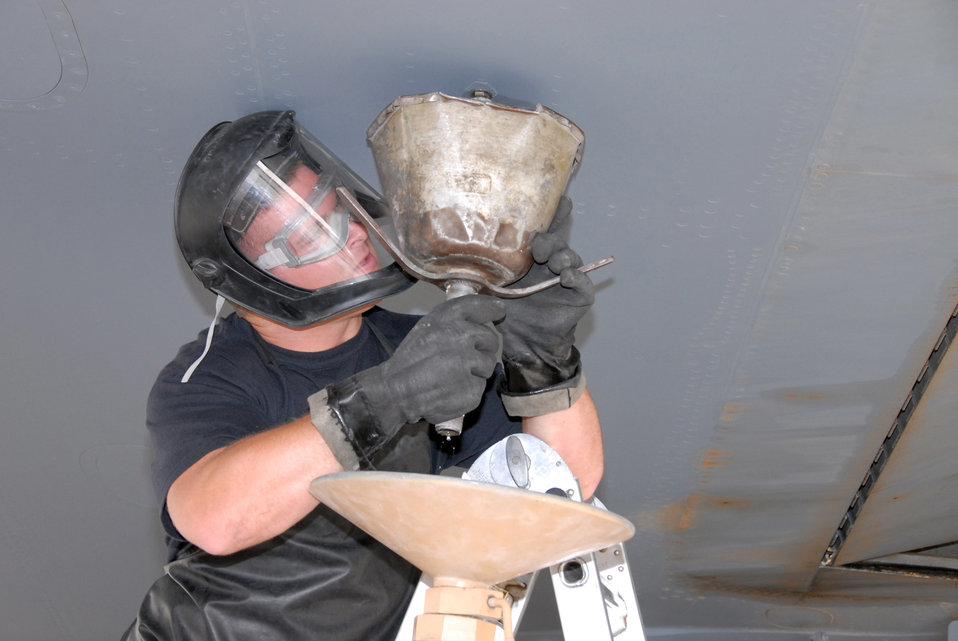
Tankers keep aircraft in the fight 24-7

Senior Airman Neal Sicard prepares a KC-135 Stratotanker for maintenance work on its fuel cell March 21 by draining the main fuel tank sumps. Airman Sicard is a crew chief assigned to the 340th Aircraft Maintenance Unit at a forward deployed location. The 340th AMU maintainers ensure tankers are fully mission ready to provide fuel to a variety of coalition aircraft throughout the region.